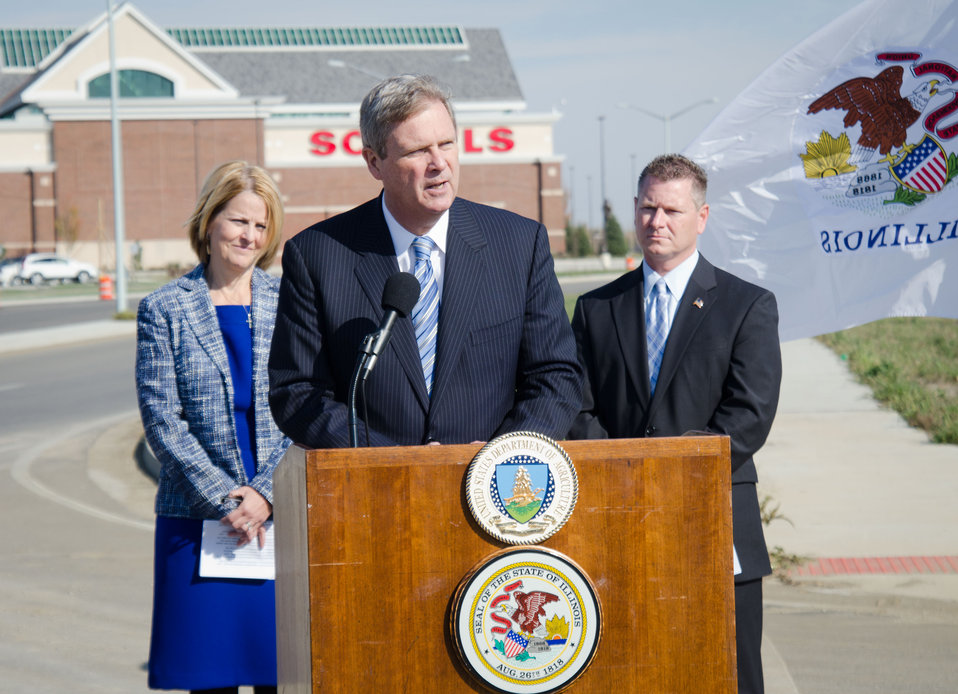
U.S. Department of Agriculture Secretary Tom Vilsack (at podium), Illinois Department of Transportation Acting Secretary of Transportation Ann Schneider (center) and Sangamon County Recorder of Deeds (left) visited a recently completed transportation project that extended the existing MacArthur Boulevard and new interchange with Interstate 72, that brought new businesses and 500 new jobs to Springfield, IL on November 2, 2011. Agriculture Secretary Tom Vilsack discussed the Administration's strategy to strengthen the U.S. economy and to highlight what passage of the American Jobs Act will mean for Illinois. 'The American Jobs Act provides common-sense steps we can take right now to put more people back to work and put more money in the pockets of working Americans, without adding a dime to the deficit,' said Secretary Vilsack. 'In Illinois, this Act will provide a tax cut for over 260,000 businesses, support the jobs of 14,500 teachers and first responders and immediately provide a job for over 20,700 construction workers through infrastructure improvements. A typical household in Illinois will receive a tax cut of around $1,640.'